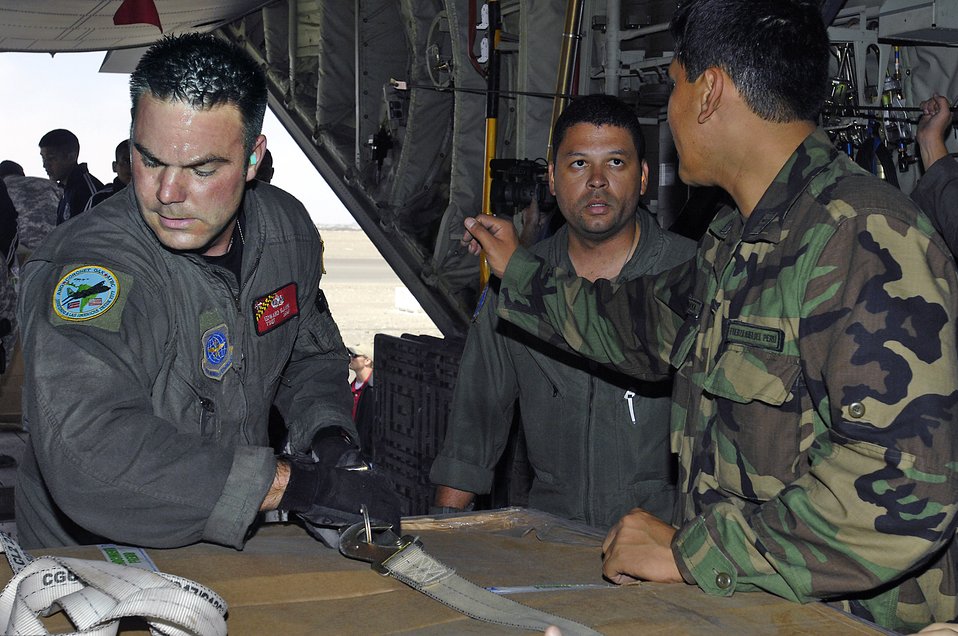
Peruvian support

Technical Sergeants Edward Slavin (left) and Wilbert Morales and Peruvian aid workers unload supplies from a C-130 Hercules in Pisco, Peru, Aug. 19. The supplies are for the victims of an 8.0 magnitude earthquake that hit parts of western Peru. Around 80,000 Peruvians have been affected by the earthquake, and 80 percent of the homes were destroyed in the city of Pisco. The sergeants are both from the Maryland Air National Guard.